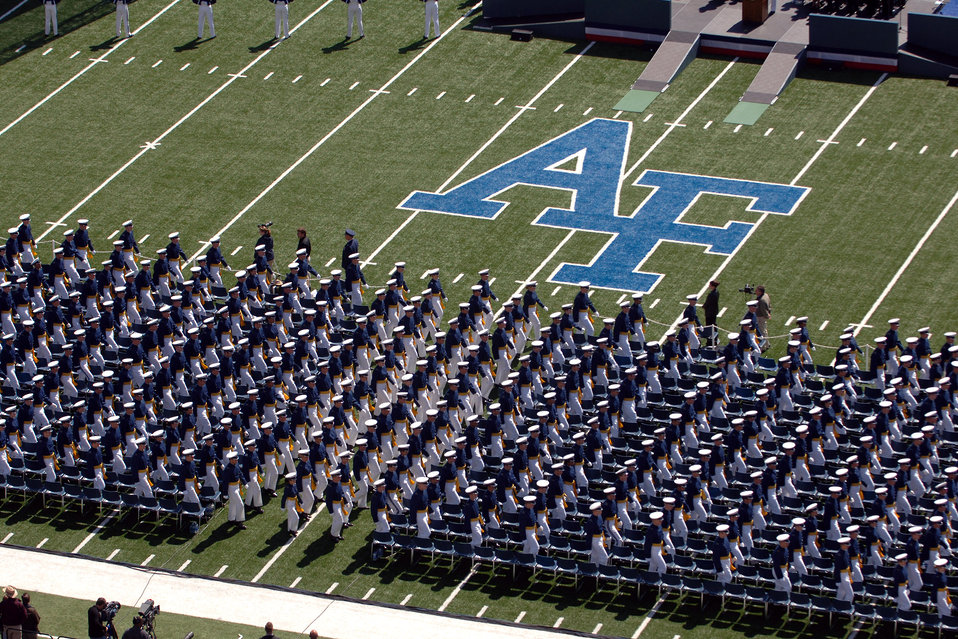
From cadet to lieutenant

Members of the U.S. Air Force Academy Class of 2007 march onto the Falcon Stadium field to start the commencement ceremony May 30 in Colorado. The ceremony marks the culmination of four years at the academy and their transition from cadet to the Air Force's newest second lieutenants.